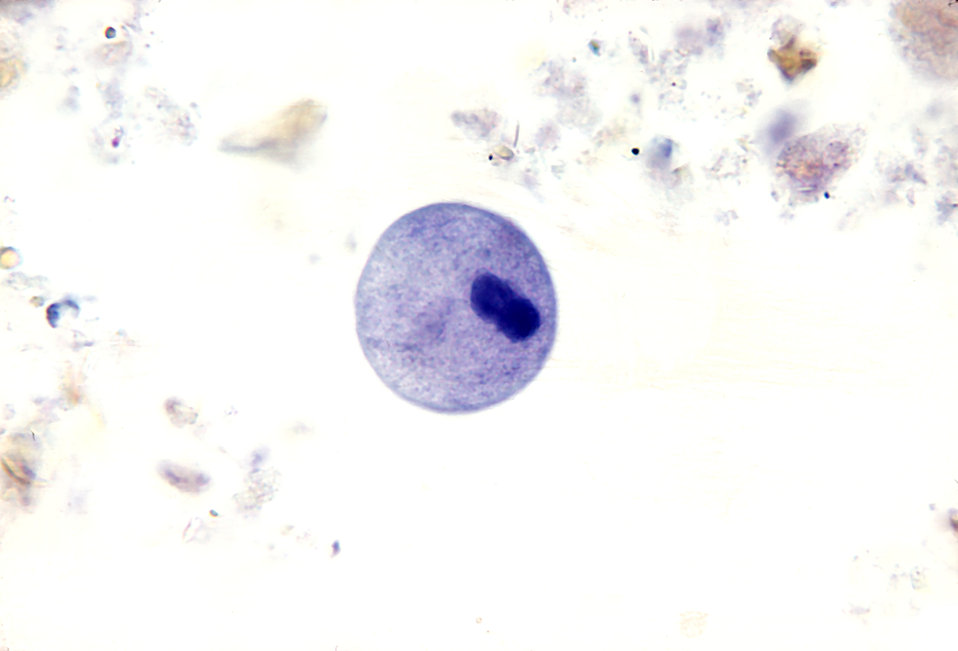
Balantidium coli cyst. Parasite.